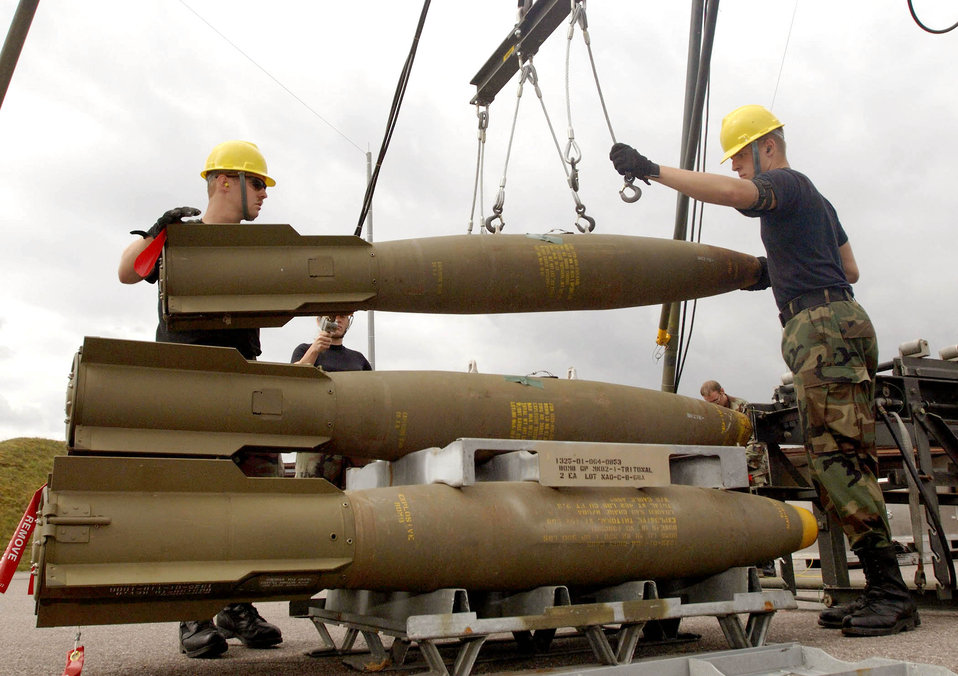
To build a better bomb

SPANGDAHLEM AIR BASE, Germany -- Senior Airman Mike Miller (left) and Airman 1st Class Timothy Flottum palletize Mark-82 bombs here in preparation for a live fire exercise. They are munitions crewmembers with the 52nd Equipment Maintenance Squadron.